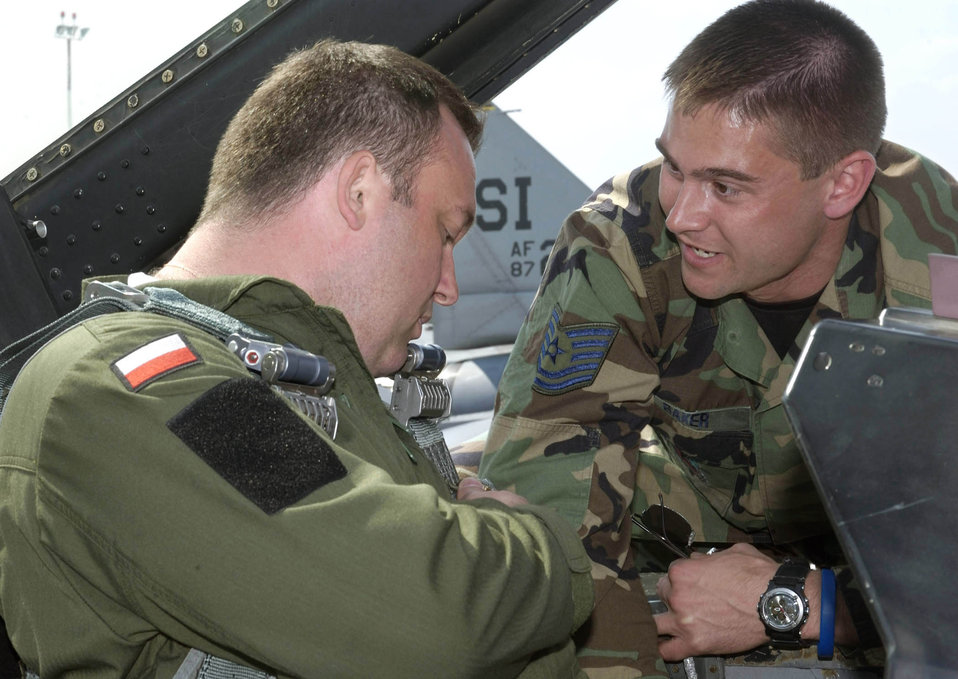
Guardsmen familiarize Polish airmen with F-16

POZNAN, Poland -- Tech. Sgt. Brenton Baker reviews F-16 Fighting Falcon seat procedures with Polish air force Capt. Arkadiesz Kurkiewicz here. Airmen from the Illinois Air National Guard's 183rd Fighter Wing are familiarizing Polish airmen with the F-16 during the U.S. European Command exercise Sentry White Falcon 2005 through June 17. In 2006, the Polish air force will start receiving their own F-16s that will begin replacing their Soviet-made MiG fighters as the country modernizes its military to NATO standards. Sergeant Baker is a life support technician with the wing.